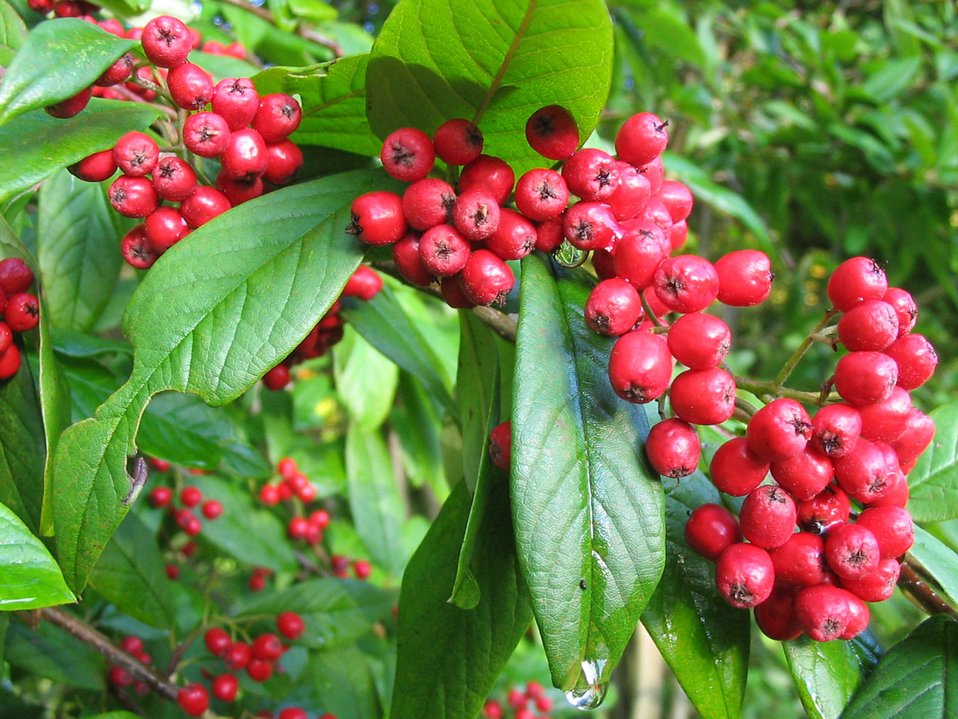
Scarlet firethorn in valley gardens park.